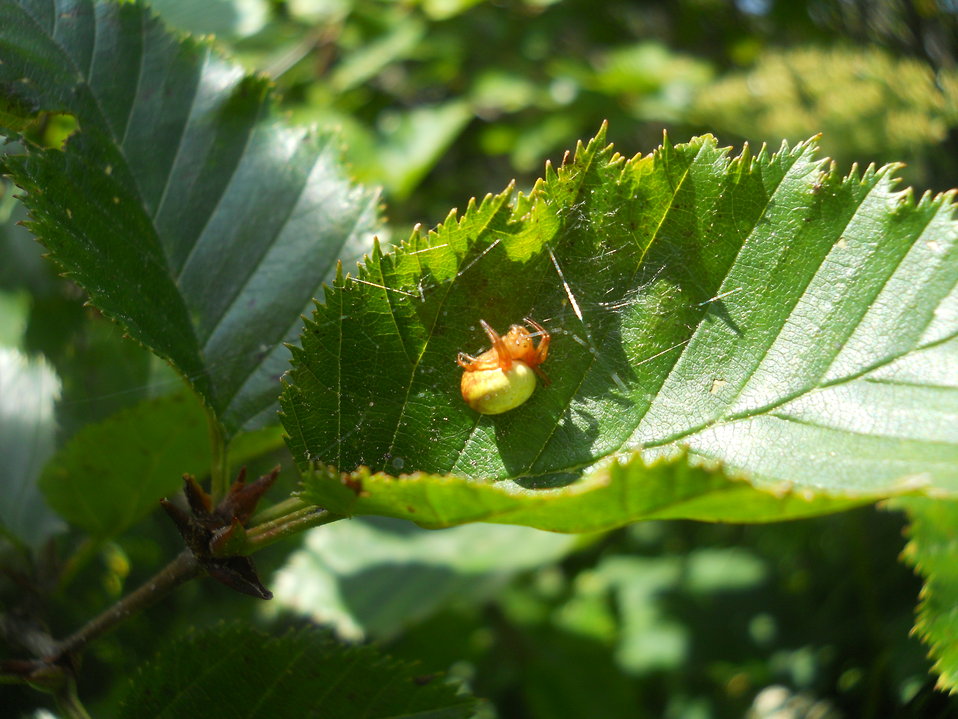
In the Spider's Web

Credit: USFWS
Photo taken by a Salmon Camp participant during a nature photography activity.

Source and Contact: Kodiak National Wildlife Refuge